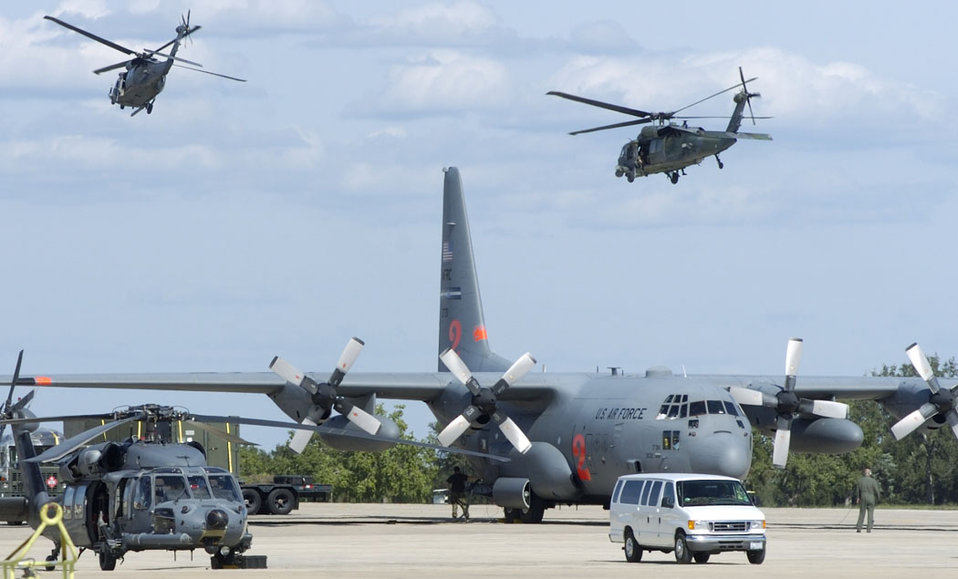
Search and rescue missions underway

RANDOLPH AIR FORCE BASE, Texas -- HH-60 Pave Hawk helicopters from 347th Rescue Wing, Moody Air Force Base, Ga. and the 920th Rescue Wing, Patrick Air Force Base, Fla. depart Randolph AFB, Texas, on a search and rescue mission Sept. 24.